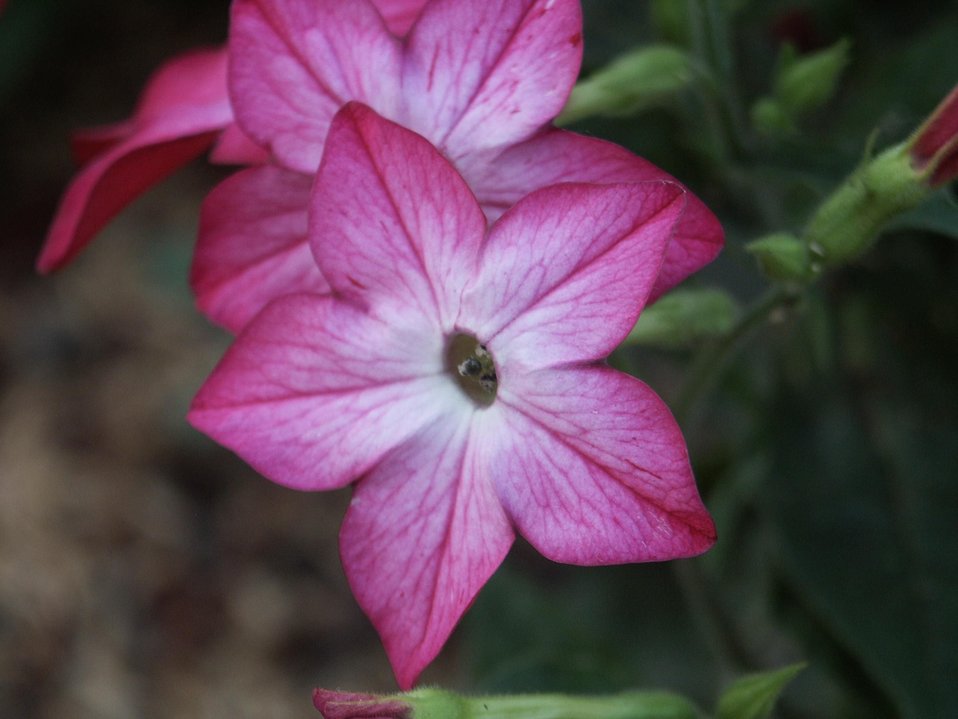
English:
Image title: Beautiful pink flower close up Image from Public domain images website, http://www.public-domain-image.com/full-image/flora-plants-public-domain-images-pictures/flowers-public-domain-images-pictures/beautiful-pink-flower-close-up.jpg.html